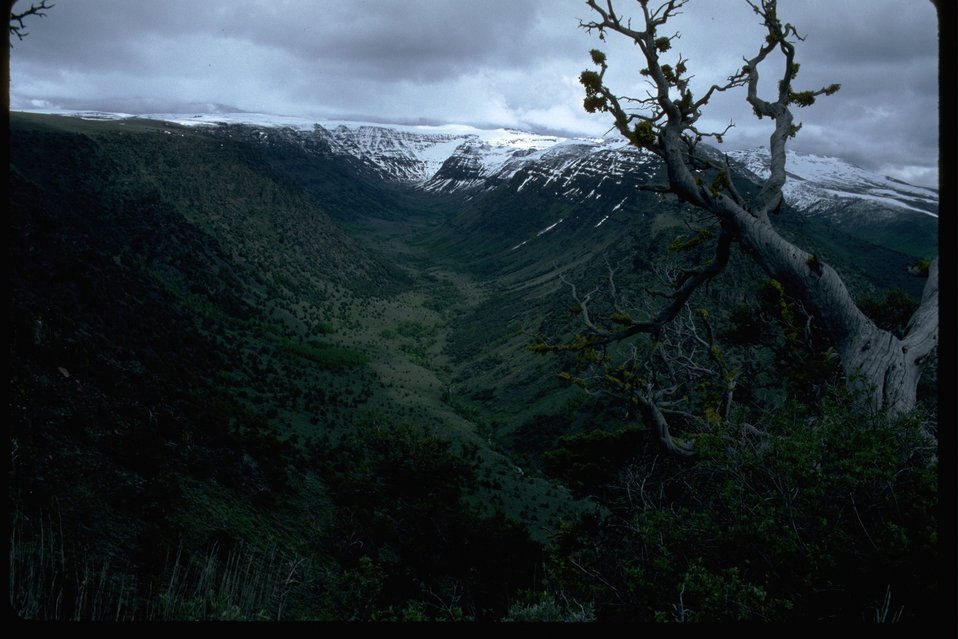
Early snows form a blanket over high Steens. View up Big Indian Gorge from Rooster Comb Area.